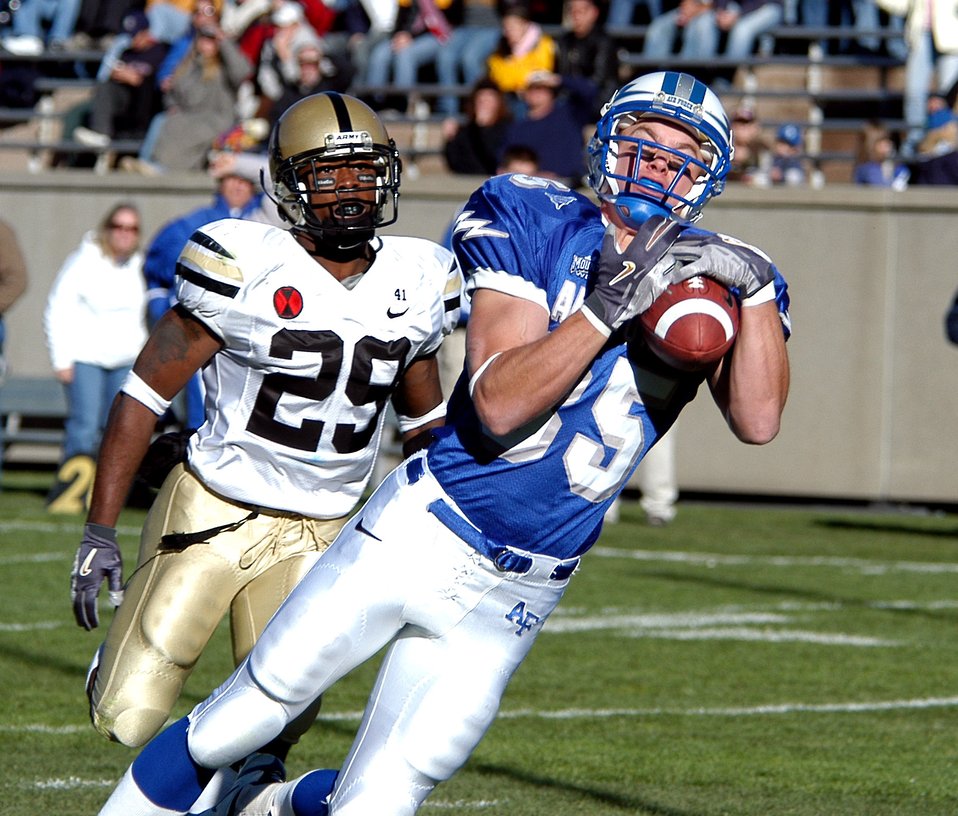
Army vs Air Force

U.S. AIR FORCE ACADEMY, Colo. (AFPN) -- Falcon wide receiver Greg Kirkwood grabs a pass in front of Army defensive back Ray Smith. The pass was ruled incomplete after Kirkwood dove into the end zone. The Falcon wide out caught three balls in the game for 52 yards.